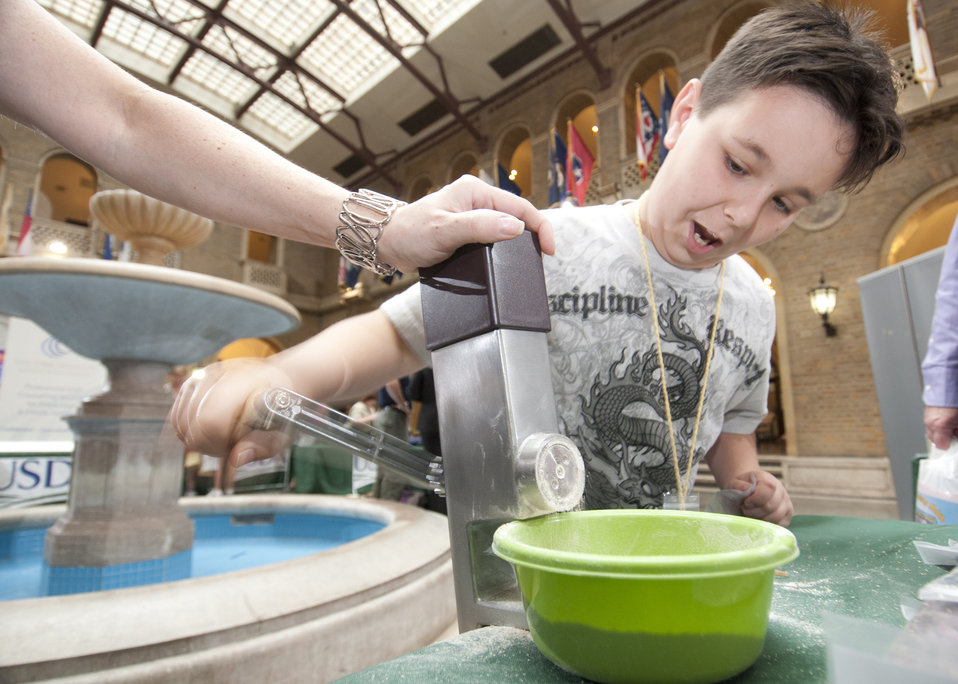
The U. S. Department of Agriculture (USDA) held its annual “Take Your Child to Work Day” on the patio of the Whitten Building, in Washington, DC, on Thursday, Apr. 28, 2011. The program is designed to introduce young people to USDA’s wide range of responsibilities and services. Peyton Witek mixes water with recycled paper to make seed cards at the People’s Garden exhibit at Agriculture’s “Take Your Child to Work Day” event.